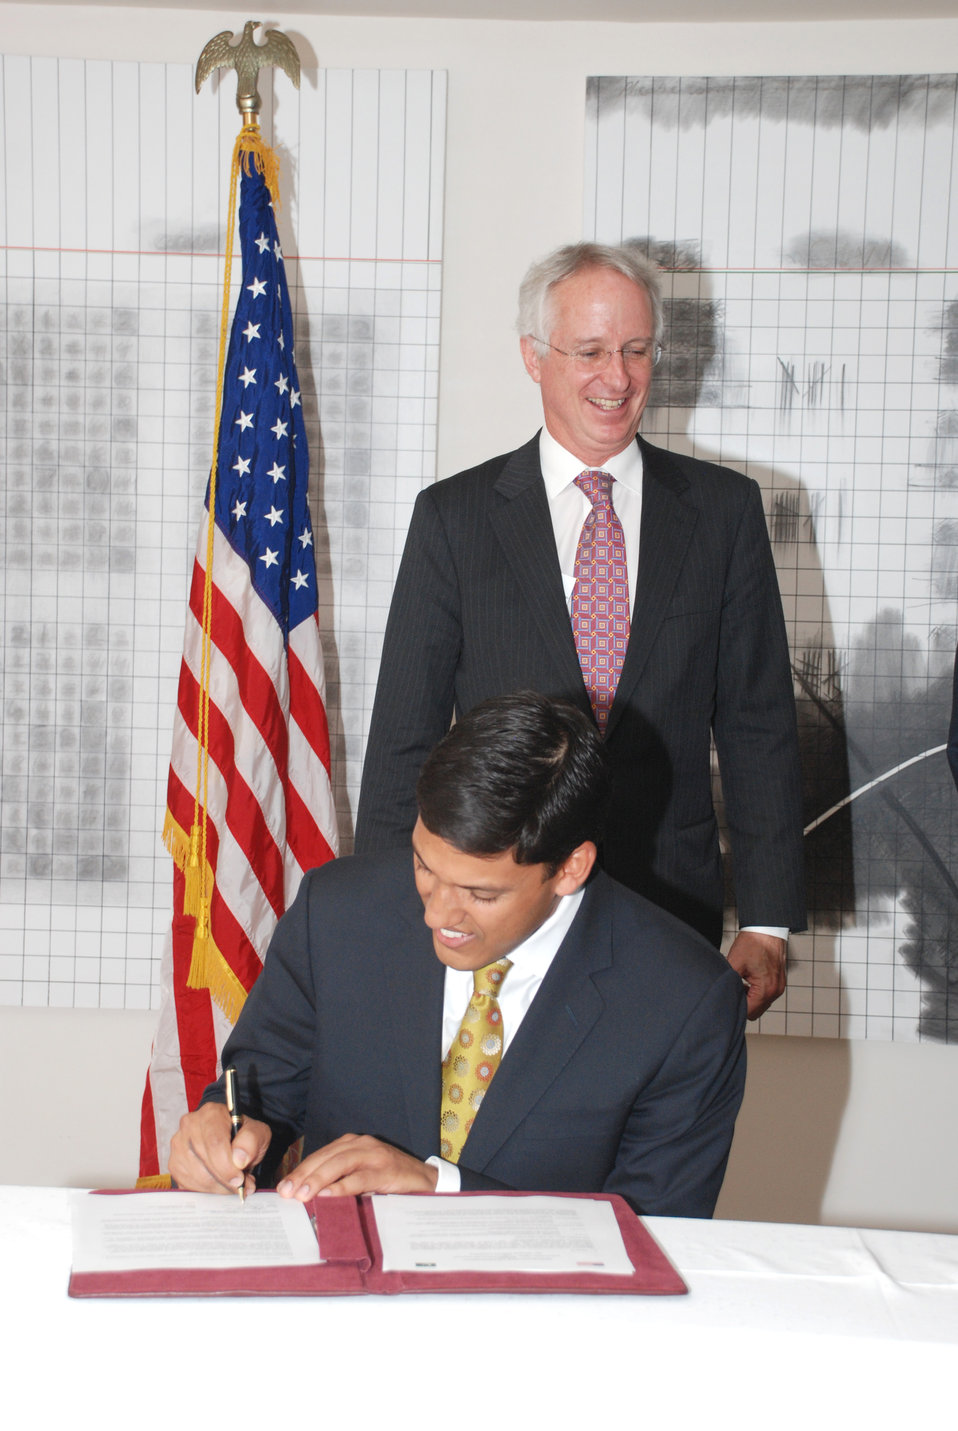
MoU Signing Ceremony between USAID and APF at Islamabad on April 18, 2012

Dr. Rajiv Shah Signing MoU